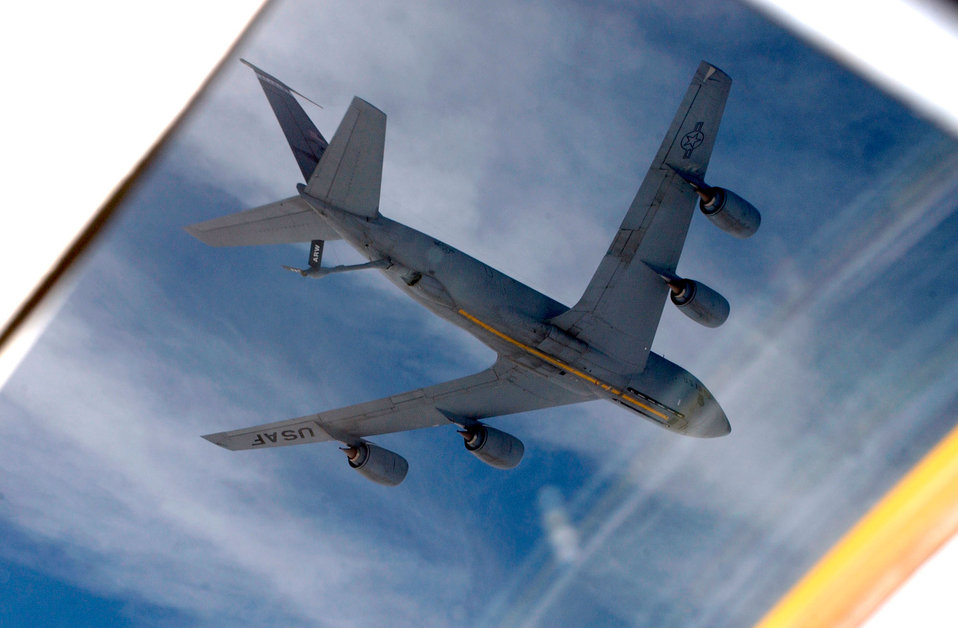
Window view

OPERATION IRAQI FREEDOM -- A 40th Expeditionary Air Refueling Squadron KC-135 pulls away from a B-52 bomber during an air refueling mission in support of Operation Iraqi Freedom, April 11. Operation Iraqi Freedom is the multinational coalition effort to liberate the Iraqi people, eliminate Iraqi's weapons of mass destruction, and end the regime of Saddam Hussein.